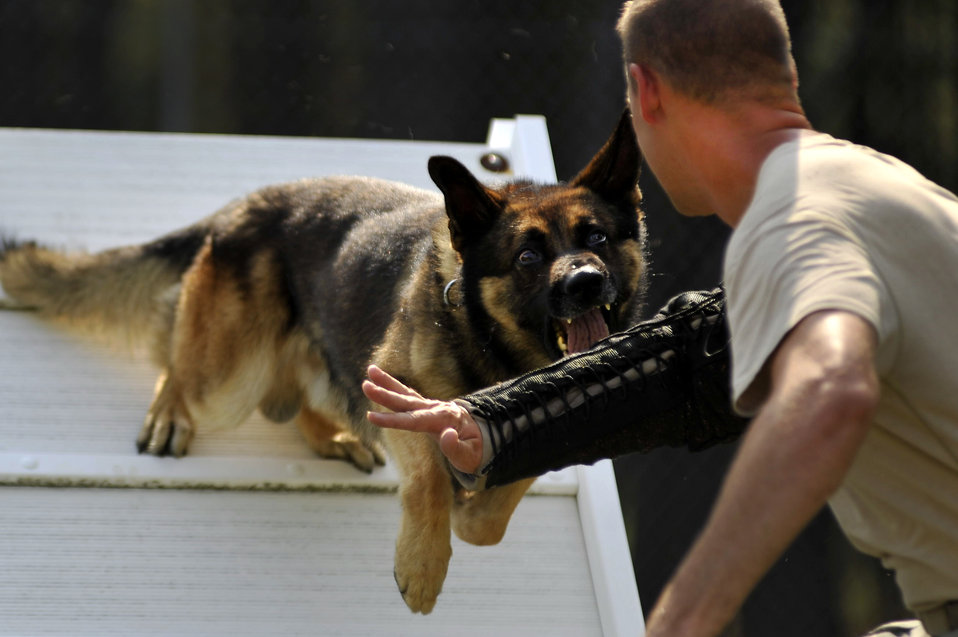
20th Security Forces Squadron Military Working Dog

Military working dog Markey lunges off of an A-frame obstacle at Tech. Sgt. Randall Blair, a 20th Security Forces Squadron military working dog trainer, during suspect pursuit training July 13, 2011, at Shaw Air Force Base, S.C. The 20th SFS MWD trainers work hard to train and prepare dogs, like Markey, for real world situations such as drug raids patrols, and other specialized mission functions for the Department of Defense and government agencies.